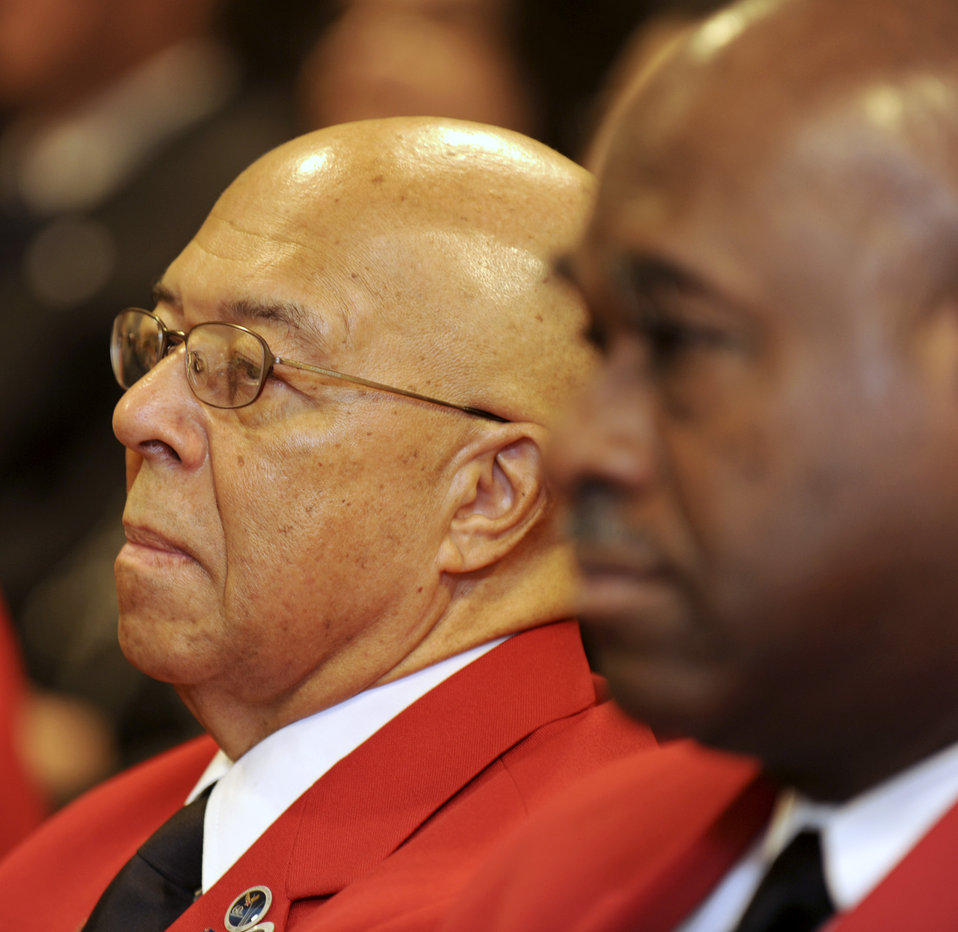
Roy LaGrone art

Tuskegee Airmen Byron Morris (left) and Raymond Hart attend the Roy LaGrone art exhibit unveiled in the AF Art Gallery Feb. 15, 2011, at the Pentagon. Mr. LaGrone was a Tuskegee Airman before pursuing a career in art.